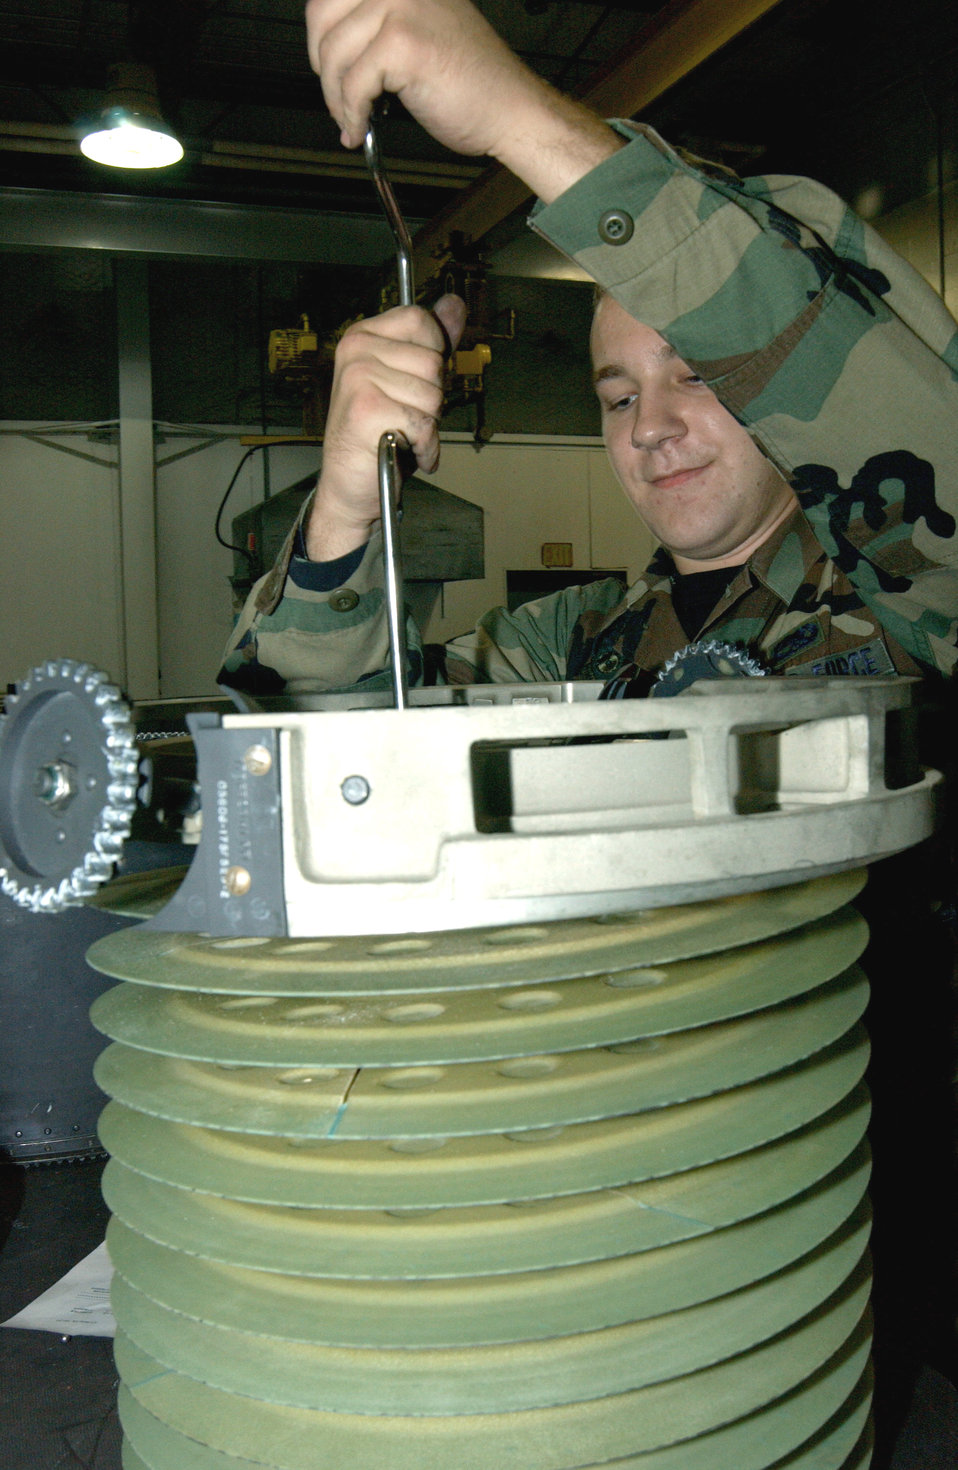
Ammunition drum

SHAW AIR FORCE BASE, S.C. -- Airman 1st Class Brandon Liebrecht disassembles an ammunition drum on the gun system of an F-16 Fighting Falcon here Sept. 22. Airman Liebrecht is assigned to the 20th Equipment Maintenance Squadron.